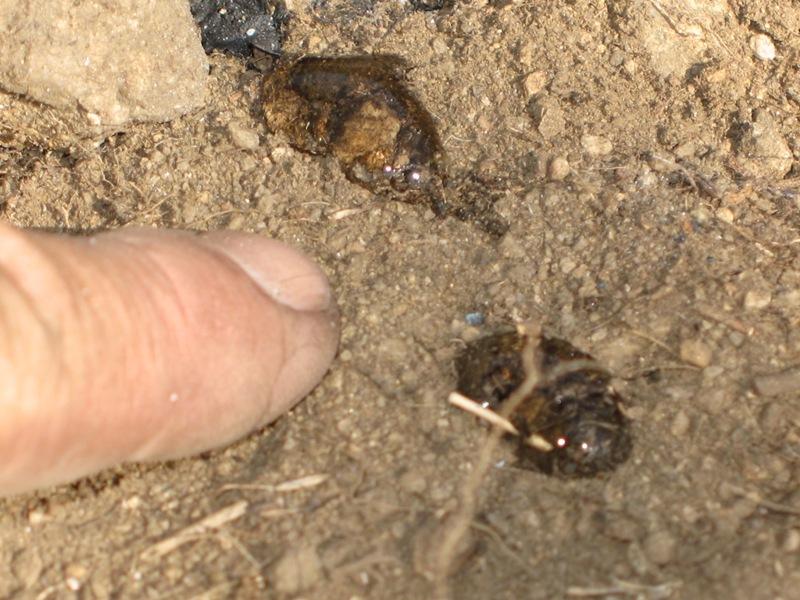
This is an example of soil water repellency damage from the Rim Fire. Soil water repellency (hydrophobicity) reduces the affinity of soils to absorb moisture, which has detrimental and often costly implications for plant growth. Water repellency includes the reduced infiltration capacity of soils, enhanced overland flow and accelerated soil erosion, uneven wetting patterns, development of preferential flow and the accelerated leaching of agrichemicals. BAER is a rapid assessment of burned watersheds by a BAER team to identify imminent post-wildfire threats to human life and safety property and critical natural or cultural resources on National Forest System lands and take immediate actions to implement emergency stabilization measures before the first major storms. Fires result in loss of vegetation exposure of soil to erosion and increased water runoff that may lead to flooding increased sediment debris flows and damage to critical natural and cultural resources. BAER team members implement seeding and mulching installation to prevent erosion, erect temporary water run-off control structures that will protect recovering areas, and installation of warning signs, replace safety related facilities, remove safety hazards, prevent permanent loss of habitat for threatened and endangered species, and prevent the spread of noxious weeds and protect critical cultural resources. The Rim Fire in the Stanislaus National Forest near in California began on Aug. 17, 2013 and is under investigation. The fire has consumed approximately 256,169 acres and is 84% contained.